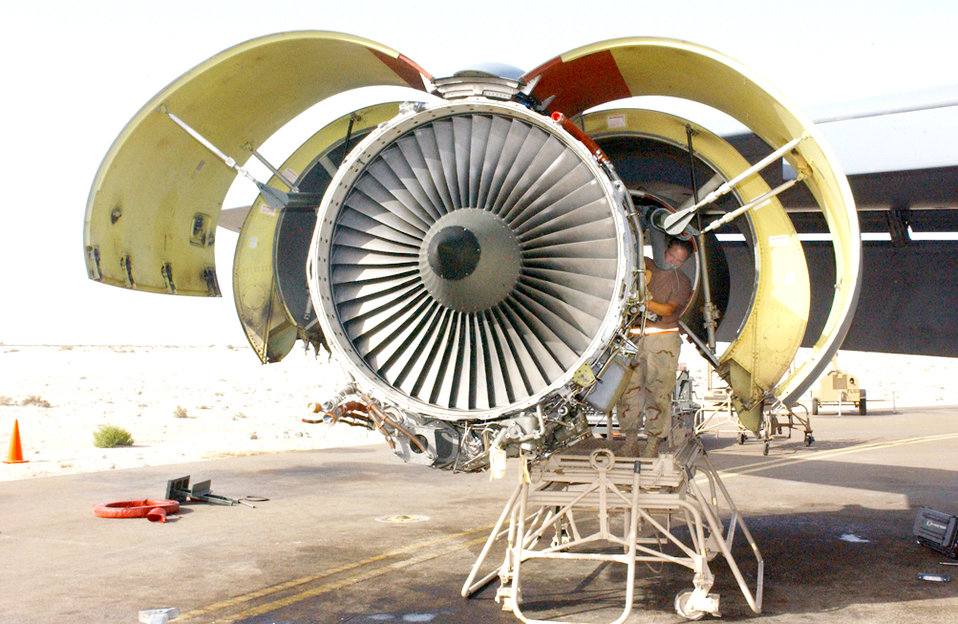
Two deployed KC-135s get rare engine swaps

SOUTHWEST ASIA -- Senior Airman Abby Hernandez reconnects components of a KC-135 Stratotanker engine that was just installed. KC-135 engines rarely go through an engine swap, but maintainers at a forward-deployed location recently had to replace an engine on two KC-135s in the span of about a week. Airman Hernandez is deployed with the 380th Expeditionary Aircraft Maintenance Squadron.